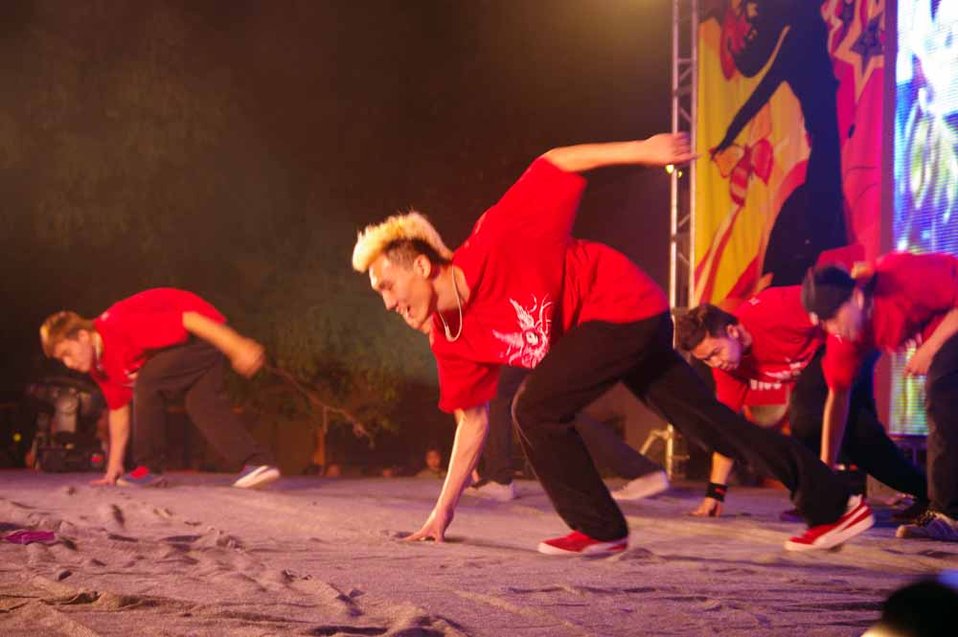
dance4life, Hanoi